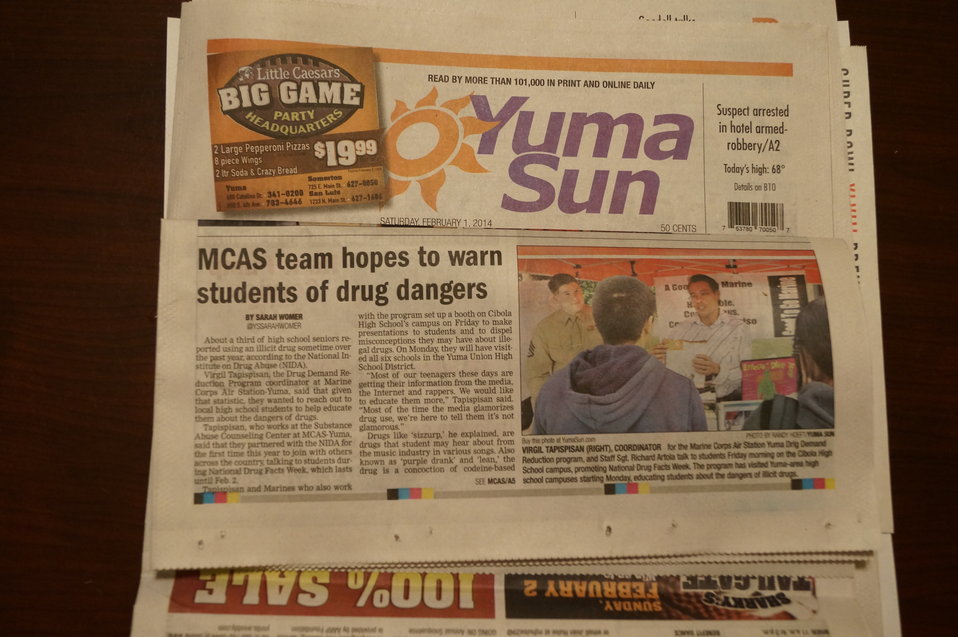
Front Page News in AZ

Drug Demand Reduction Program makes front page news recognizing its participation in National Drug Facts Week, 2014. .